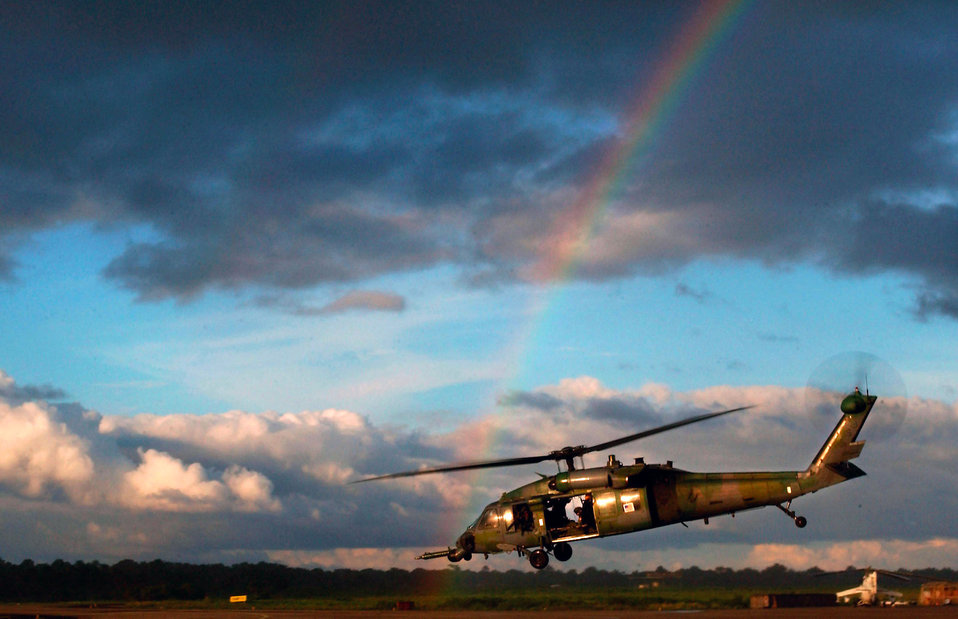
A ray of hope in a threatening sky

LUNGI, Sierra Leone -- An HH-60G Pave Hawk helicopter from the 56th Rescue Squadron here flies July 19 during a functional check flight. Airmen of the 56th RQS are providing recovery and emergency evacuation capability for the humanitarian assistance survey team in Liberia.